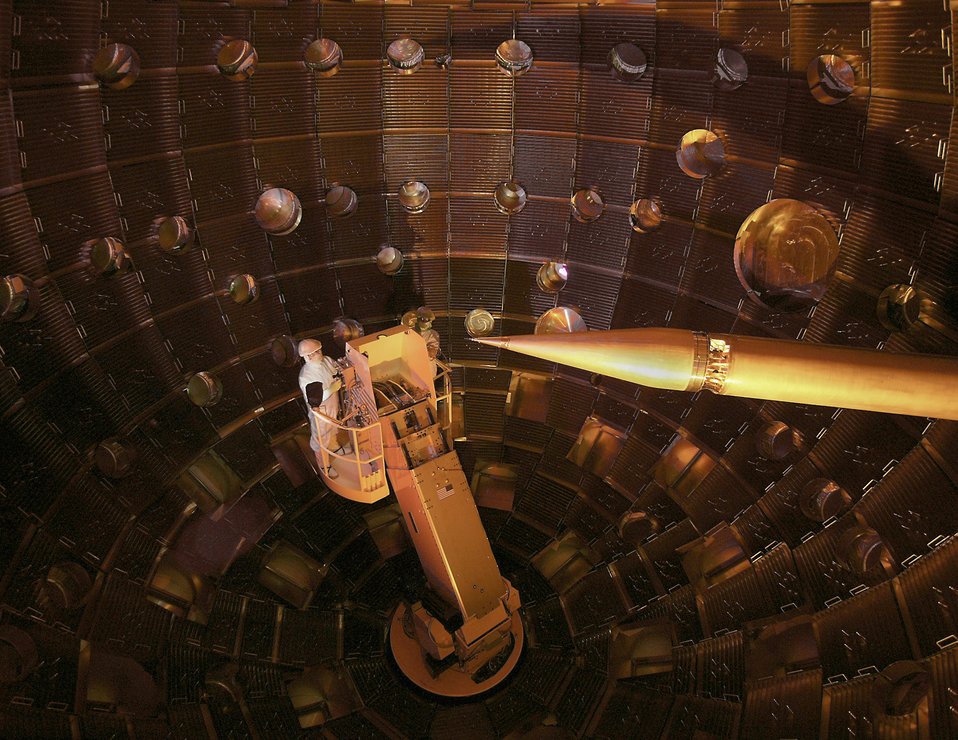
THE INTERIOR OF THE NATIONAL IGNITION FACILITY AT LAWRENCE LIVERMORE NATIONAL LABORATORY. THE SERVICE MODULE CARRYING TECHNICIANS CAN BE SEEN ON THE LEFT. THE TARGET POSITIONED, WHICH HOLDS THE TARGET, IS ON THE RIGHT.

The National Ignition Facility at LLNL enables key programs and technologies that support DOE's National Nuclear Security Administration Defense Programs and LLNL missions, ensuring that the national's weapons remain safe, secure and reliable. NIF, one of the cornerstones of DOE's stockpile stewardship program, will integrate the inertial confinement fusion program into the overall stockpile stewardship program and foster the development of associated laser technologies.